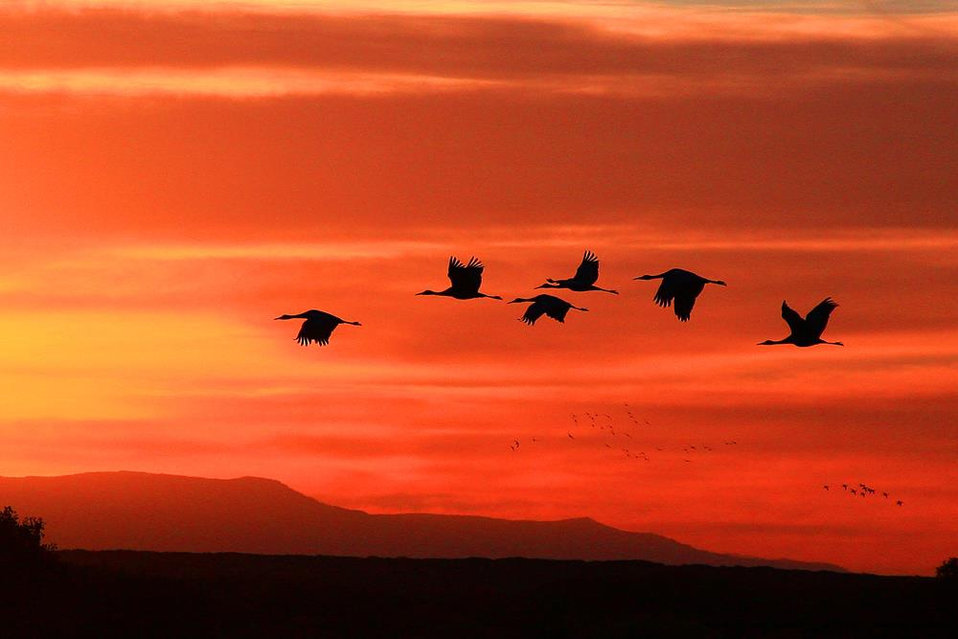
sandhill cranes at sunset, Bosque del Apache NWR

Bosque del Apache NWR, NM
Nov. 13, 2011
Photo: Marvin De Jong, USFWS volunteer